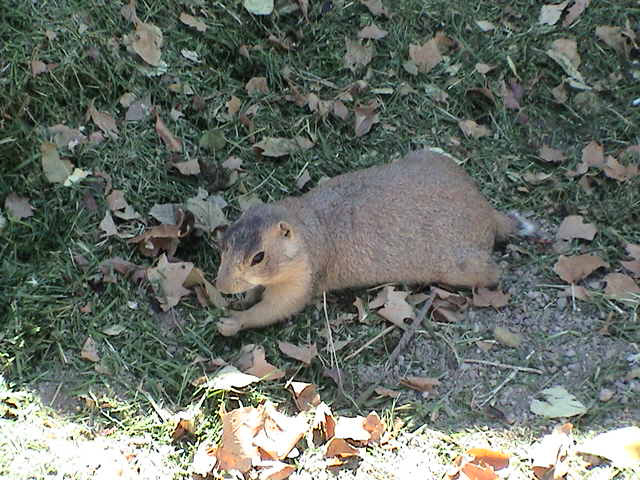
This prairie dog, a member of the genus Cynomys was photographed in New Mexico, 2003.